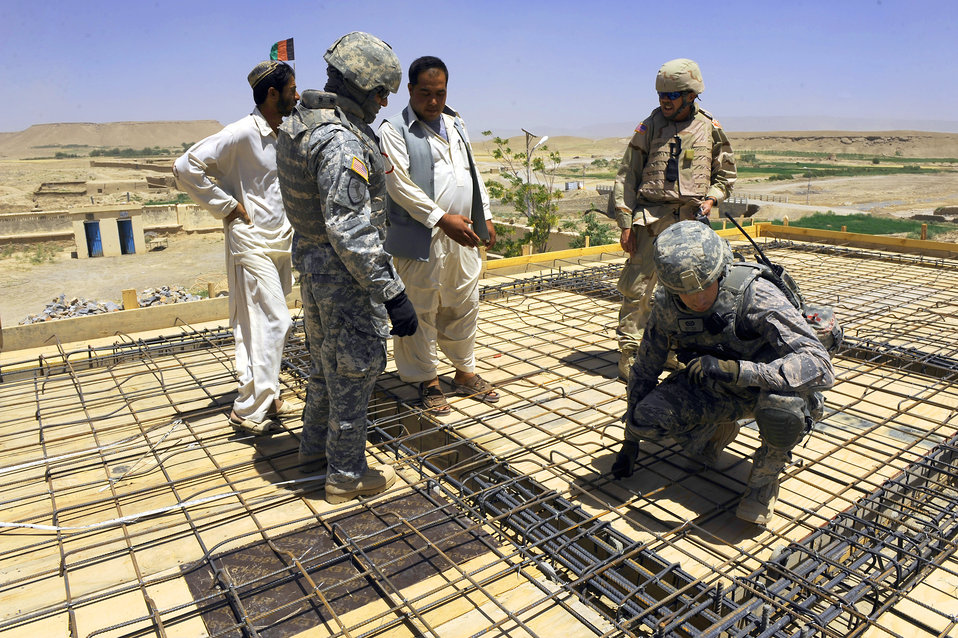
Joint team construction projects follow Afghan priorities

First Lt. Keith Yelk inspects an outpatient clinic at the S.Malakhi Provincial Hospital May 27, 2010, in Qalat City, Afghanistan. Lieutenant Yelk is a civil engineer assigned to Provincial Reconstruction Team Zabul.